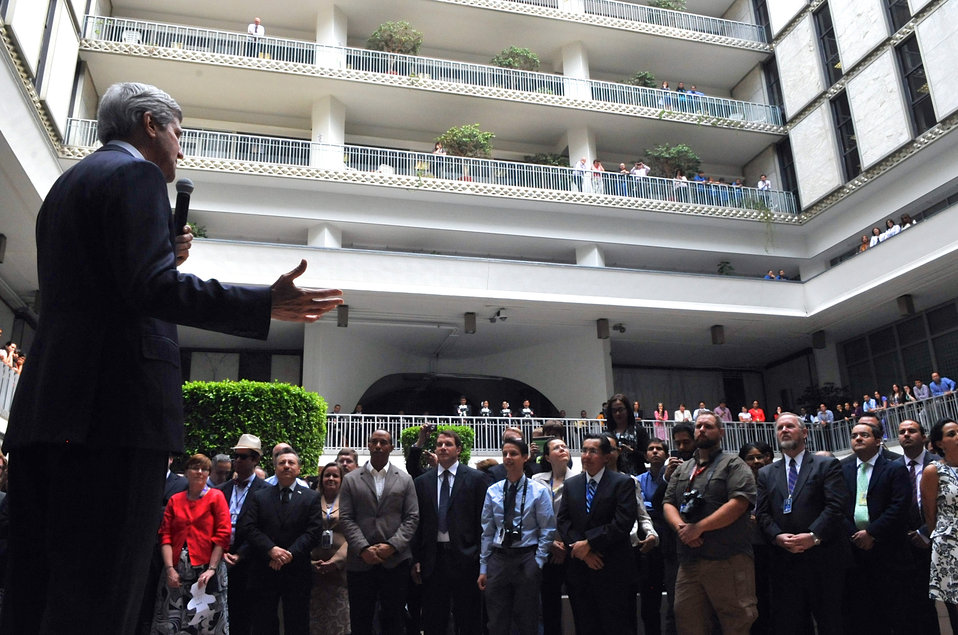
Secretary Kerry Thanks Embassy Mexico City Employees During Visit

U.S. Secretary of State John Kerry thanks the family and employees of U.S. Embassy Mexico City during a visit to Mexico City, Mexico on May 21, 2014.